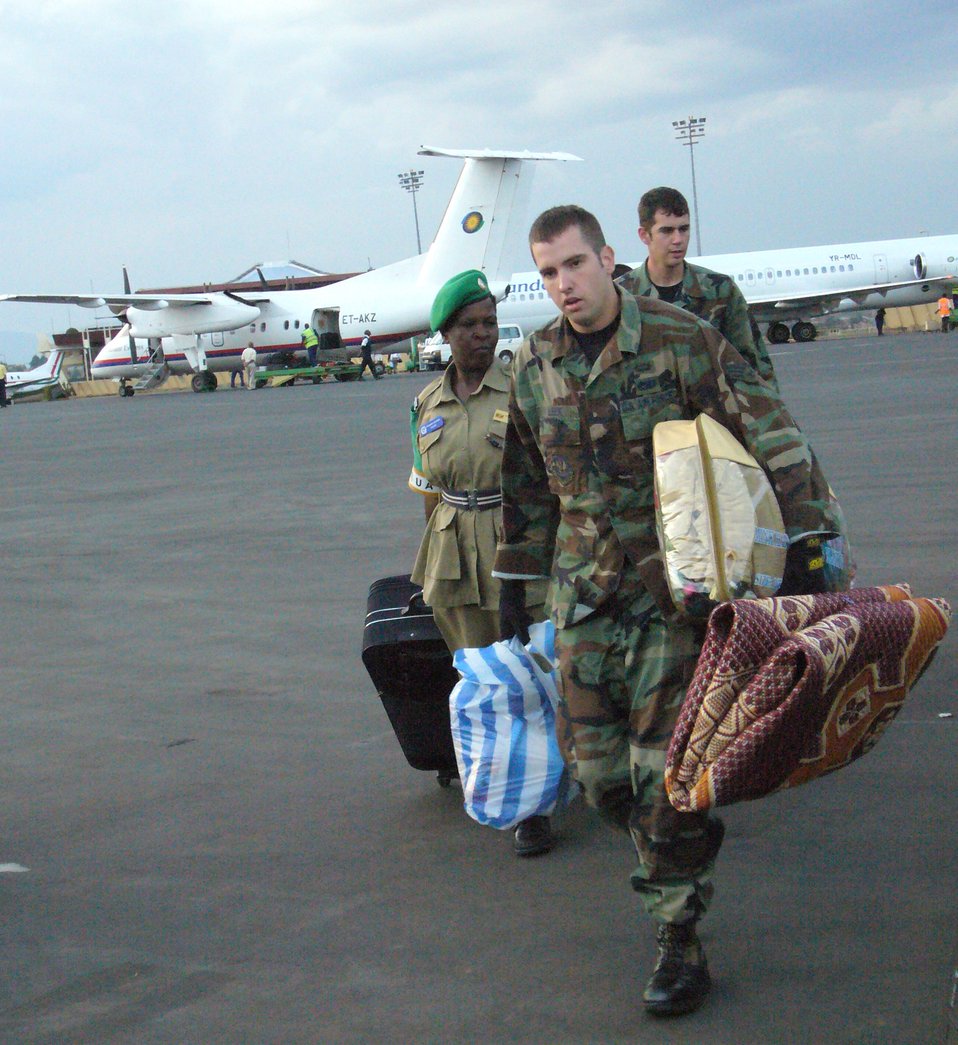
Ramstein team flies into Darfur with Botswana aircrew

Ramstein Airmen assist Ugandan civil police with their baggage while transfering at Kigali International Airport, Rwanda. The Ugandan civil police are returning home after a one-year deployment to the Darfur region. Airmen from Ramstein Air Base, Germany, are deployed to Kigali, Rwanda, to provide airlift support for the African Union peacekeeping mission.